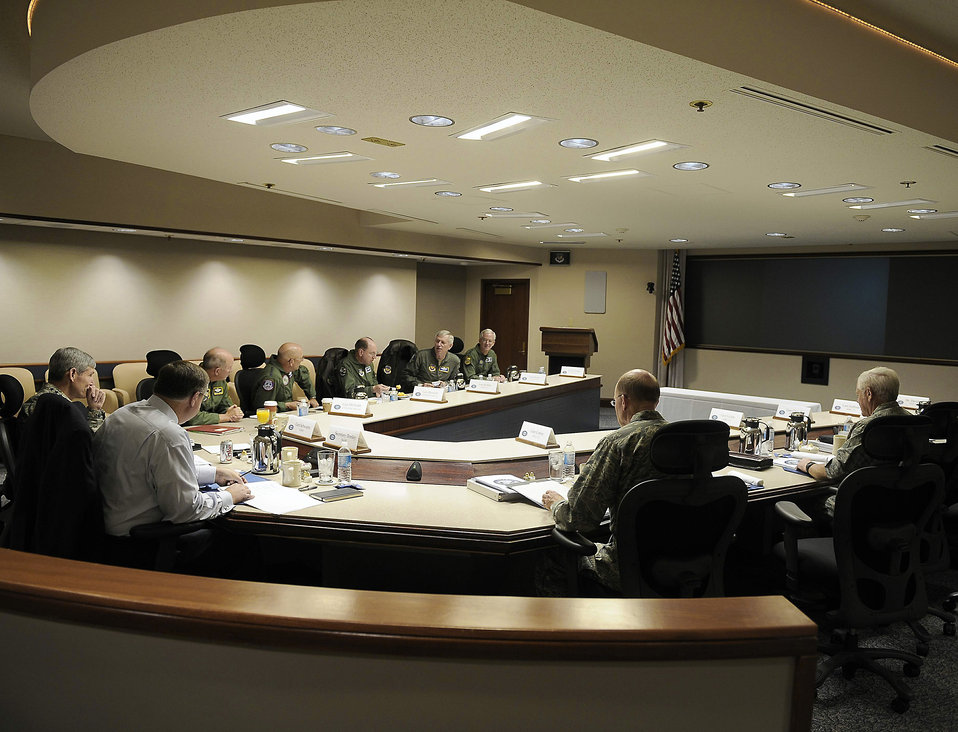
CORONA Top 2009

Air Force Chief of Staff Gen. Norton Schwartz and Secretary of the Air Force Michael Donley lead the four-star session of CORONA Top 2009 June 6 at Wright-Patterson Air Force Base, Ohio. This was the fifth successive year CORONA Top has been hosted at Wright-Patterson.